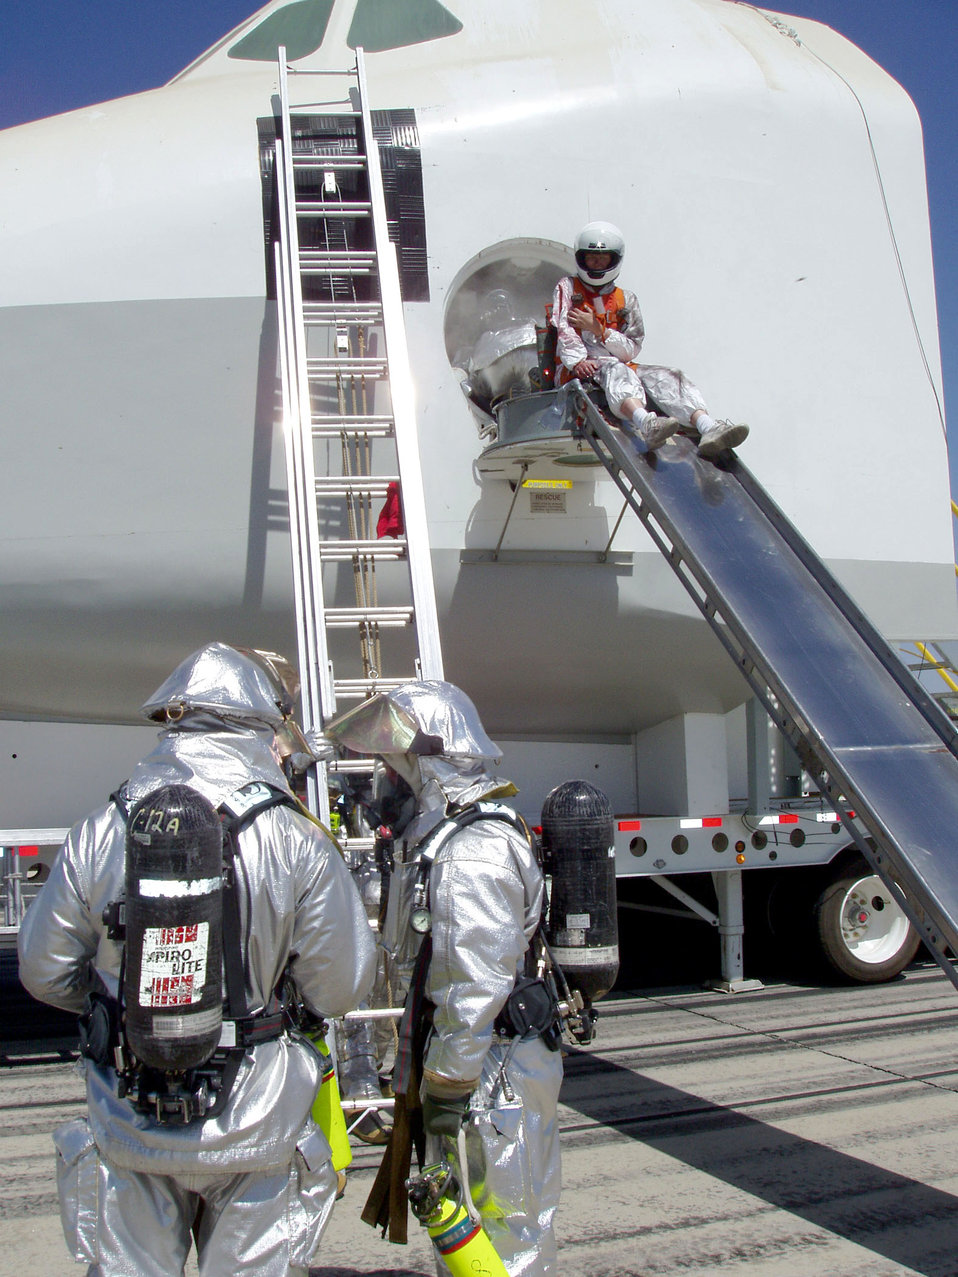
Shuttle exercise tests NASA, Edwards response teams

EDWARDS AIR FORCE BASE, Calif. -- Firefighters with the 95th Air Base Wing's fire protection division wait for a shuttle crewmember to slide down the side hatch. During the mock landing, the shuttle crew reported smoke in the cockpit.